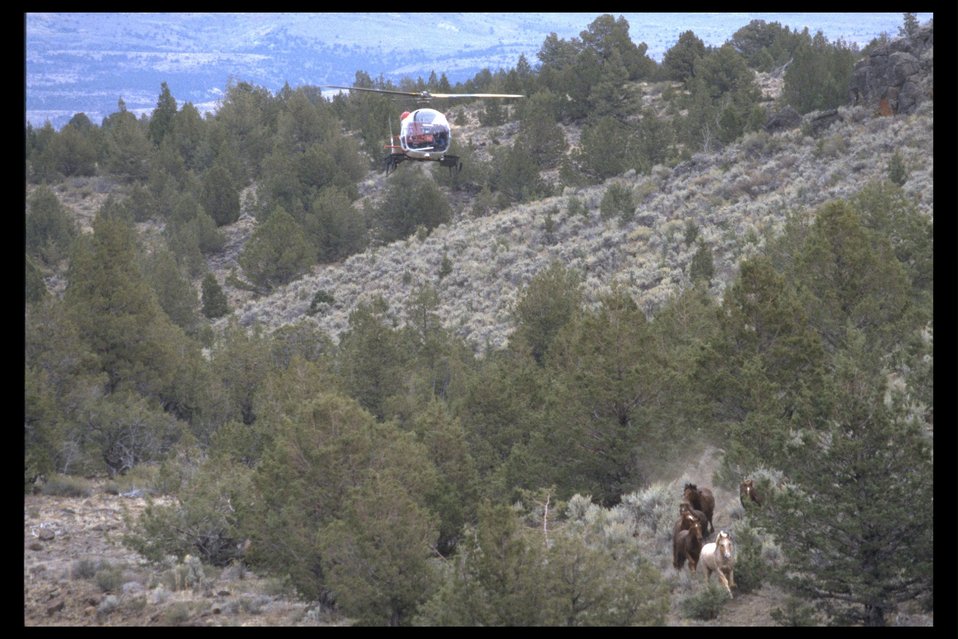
Helicopter driving South Steens wild horses into a trap.